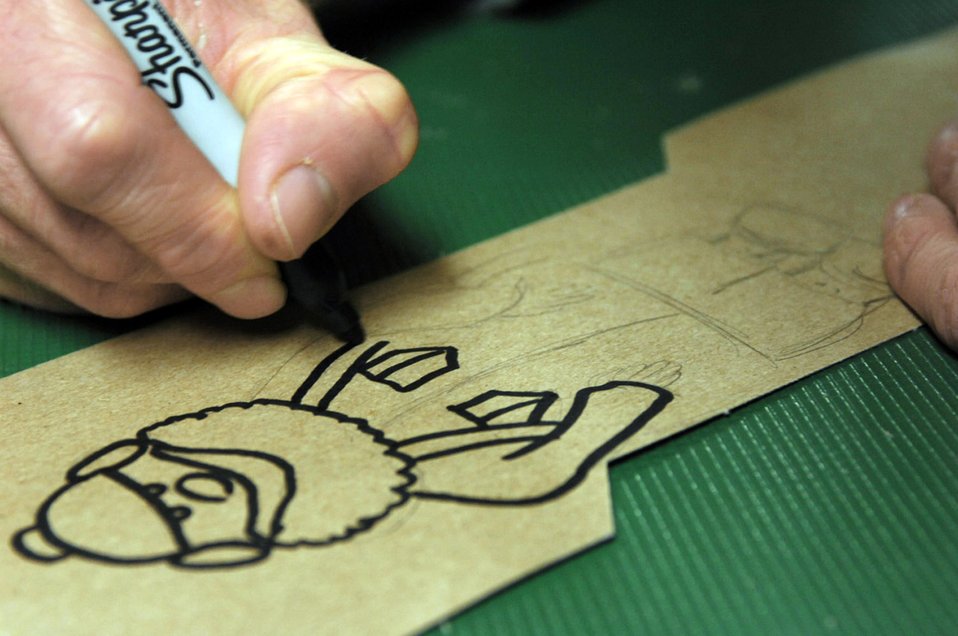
Holiday spirit in Afghanistan

Tech. Sgt. Ryan McMaster draws cartoon characters for a holiday diorama he created from locally-procured materials Dec. 14 at Bagram Air Base, Afghanistan. Sergeant McMaster is an aircrew life support technician with the 774th Expeditionary Airlift Squadron.